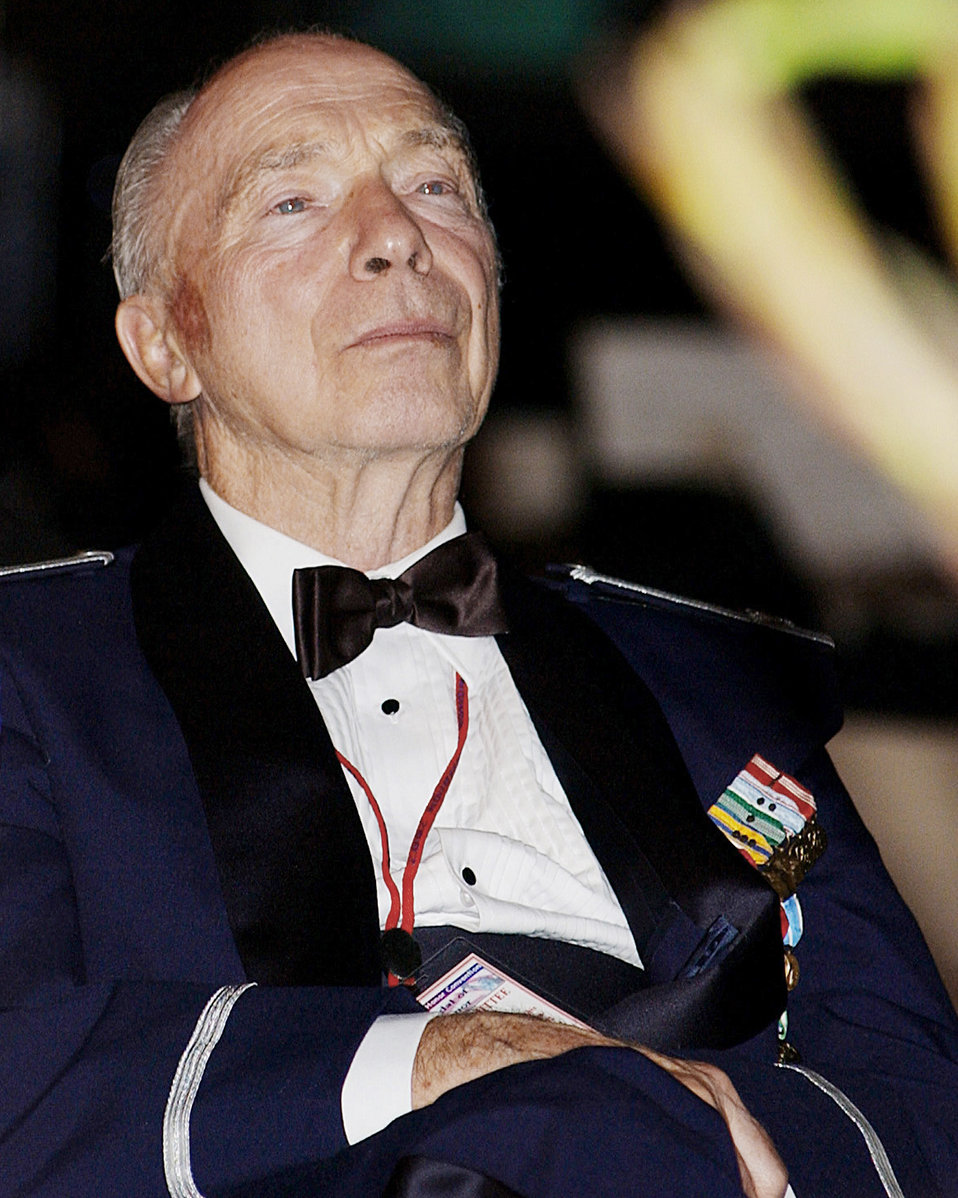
Colonel dePyssler

Retired Col. Steve dePyssler, the director of the Retiree Activities Office at Barksdale Air Force Base, La., listens to Gen. Norman H. Schwarzkopf speak Sept. 12, 2002, during the Congressional Medal of Honor Society's national convention banquet in Shreveport, La.